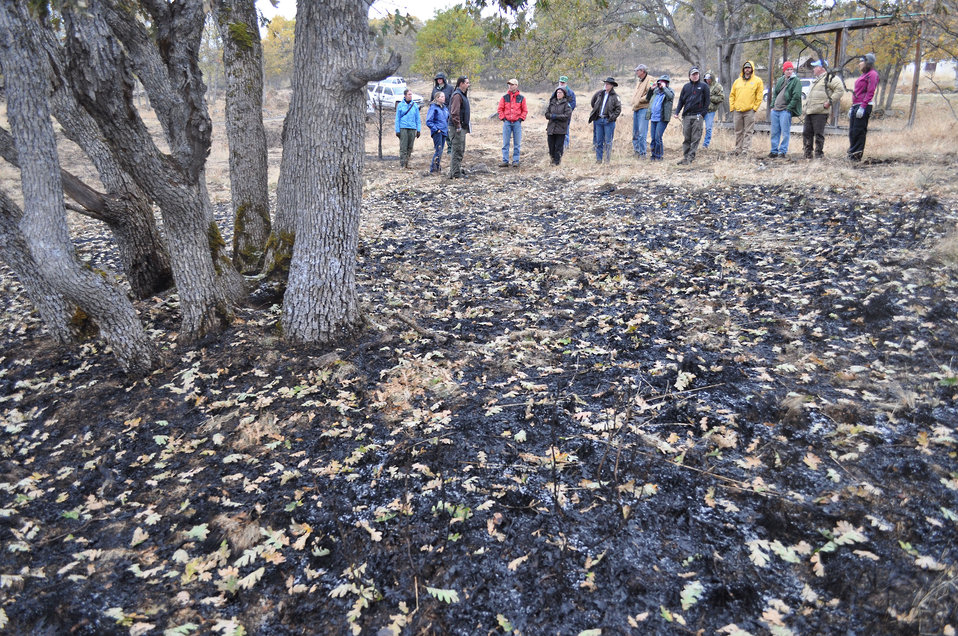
Prescribed burn results, Colestin Valley